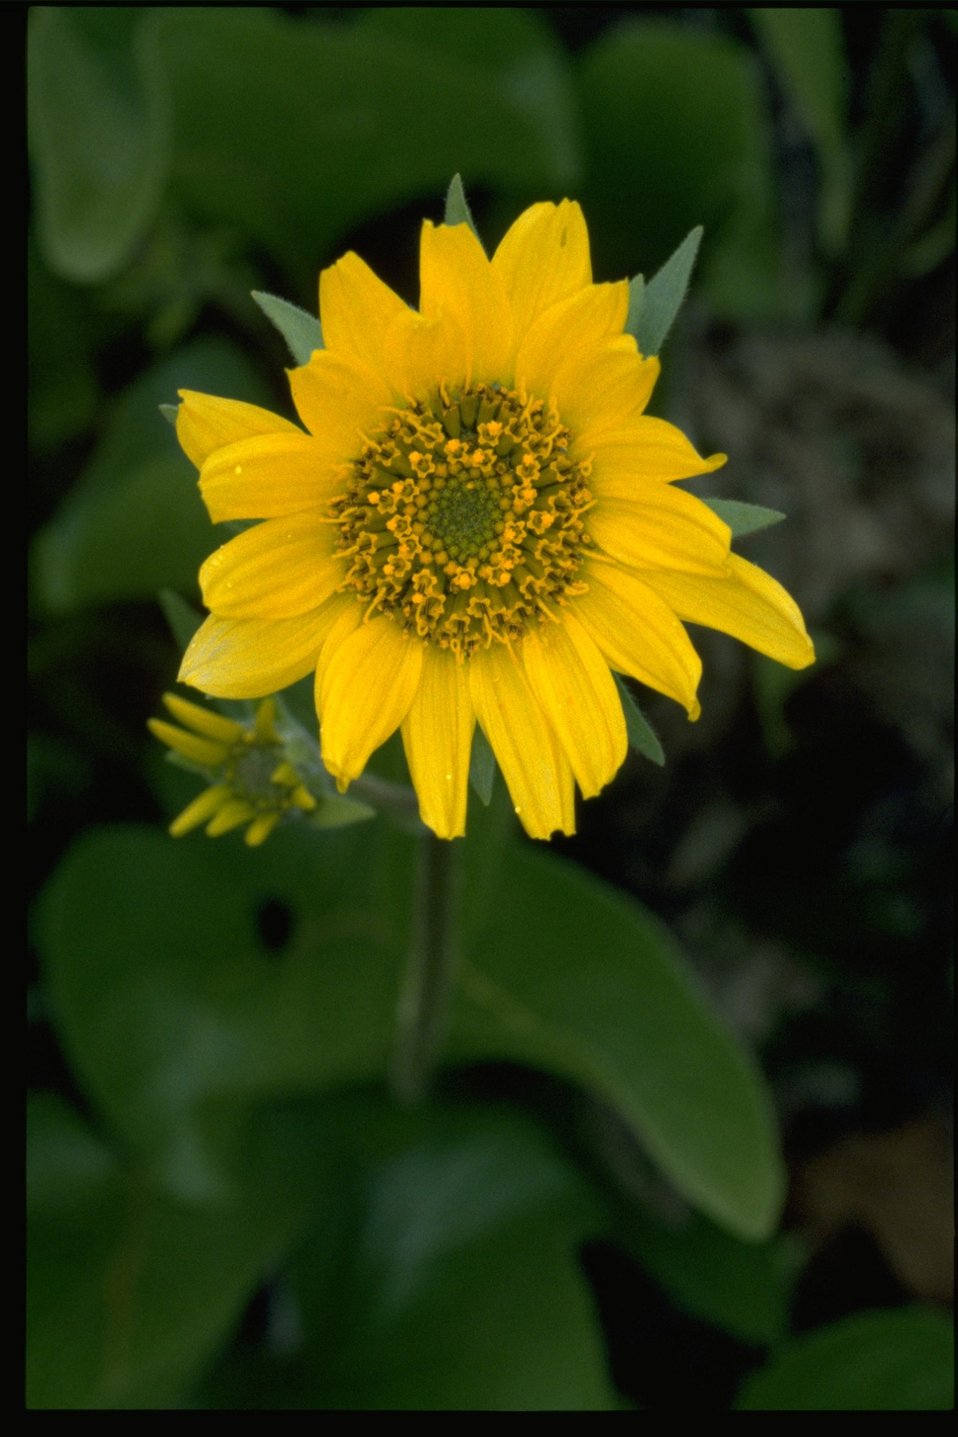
Closeup shot of wildflower (genus Balsamorhiza).